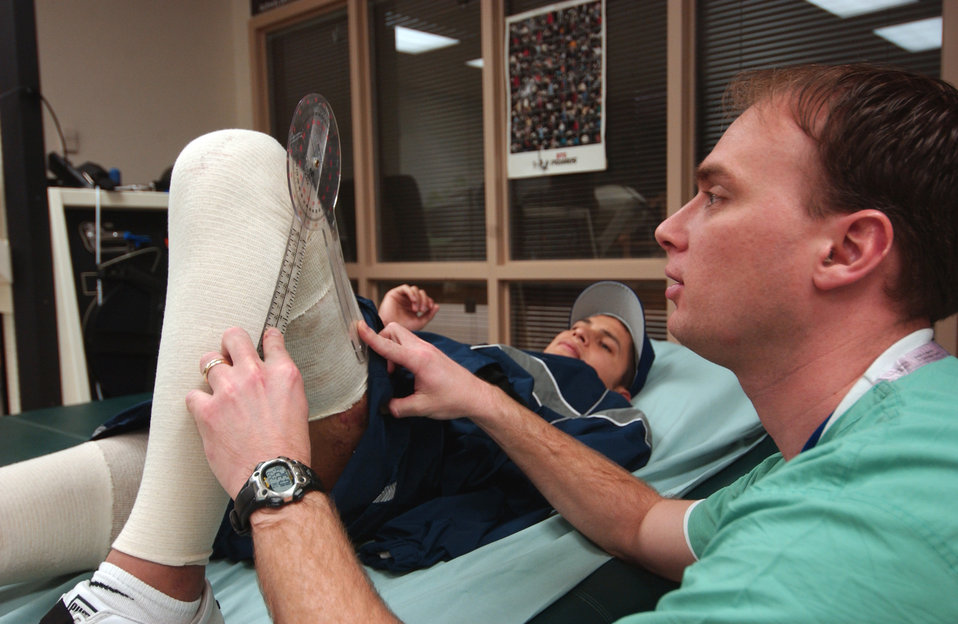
Airman wants to continue to serve

Physical therapist Scott Dewey checks the range of motion of Senior Airman Dan Acosta's legs during a therapy session Thursday, Feb. 23, 2006, at the burn rehabilitation center at Brooke Army Medical Center in San Antonio.